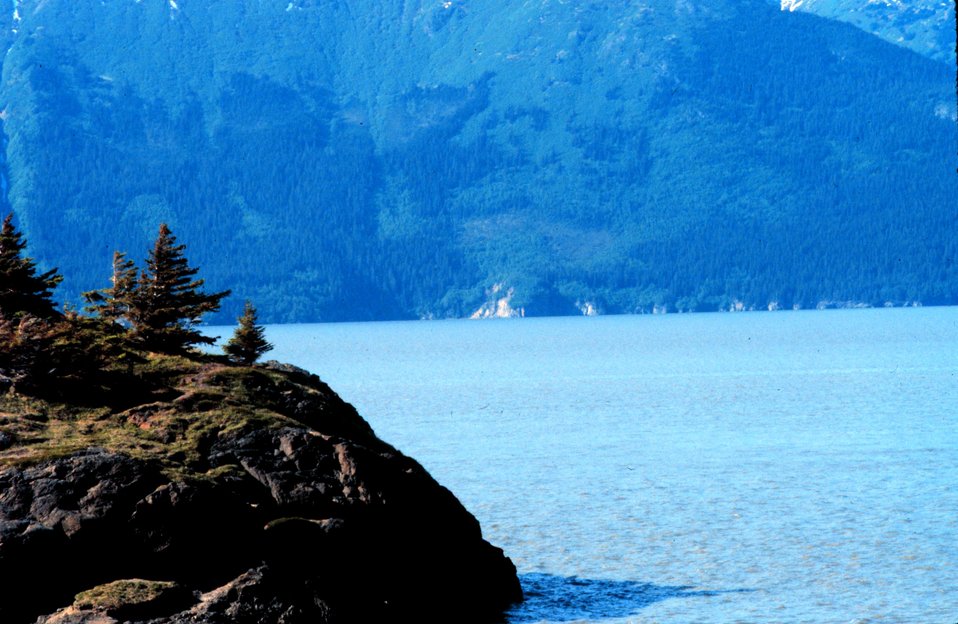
Coastal scene near Seward